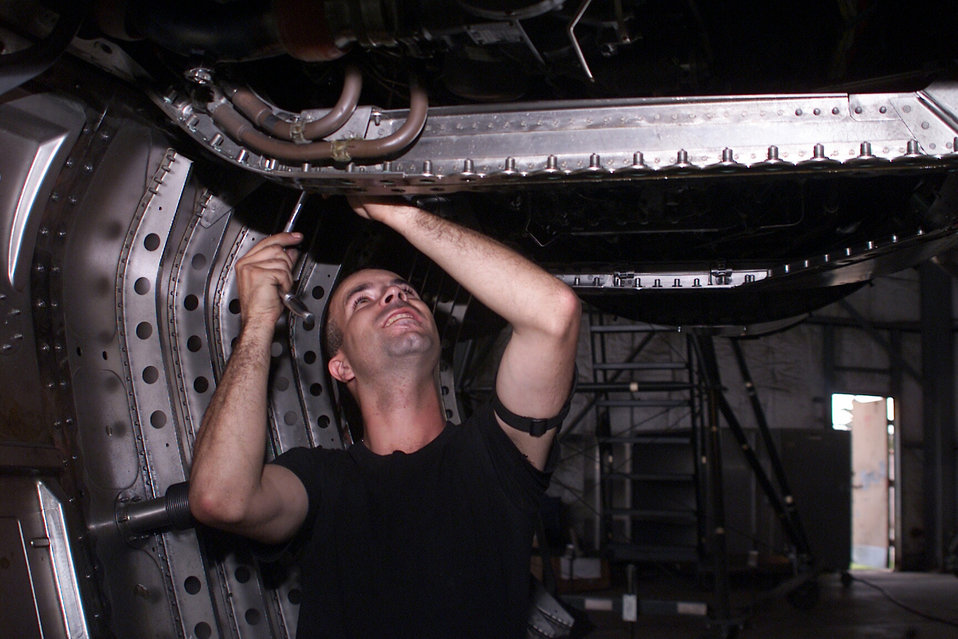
Phase inspection

GWANGJU AIR BASE, South Korea -- Senior Airman Jonathan Higdon conducts a phase inspection on an F-15E Strike Eagle here Sept. 7.